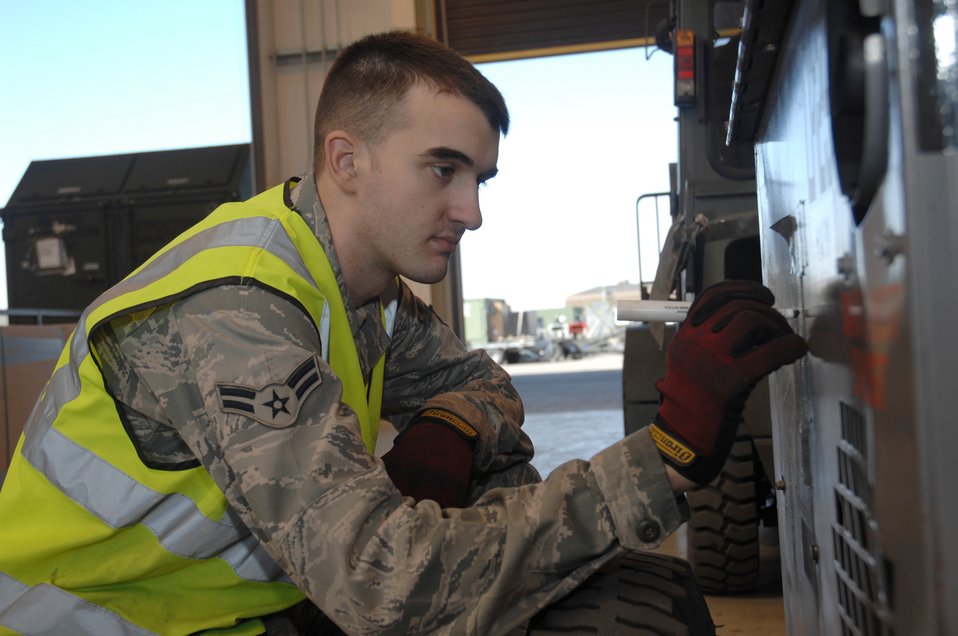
Odyssey Dawn

Airman 1st Class Ty Craiglow, 48 LRS, vehicle mechanic annotates the center balance of a CP-29 Low-Pack compressor as part of deployment processing at RAF Lakenheath, England, March 19, 2011. Units from the 48th Fighter Wing are currently conducting pre-deployment procedures in support of Operation Odyssey Dawn. The 48th Fighter Wing provides all-weather, day or night air superiority and air-to-ground precision combat capability as well as combat search and rescue.